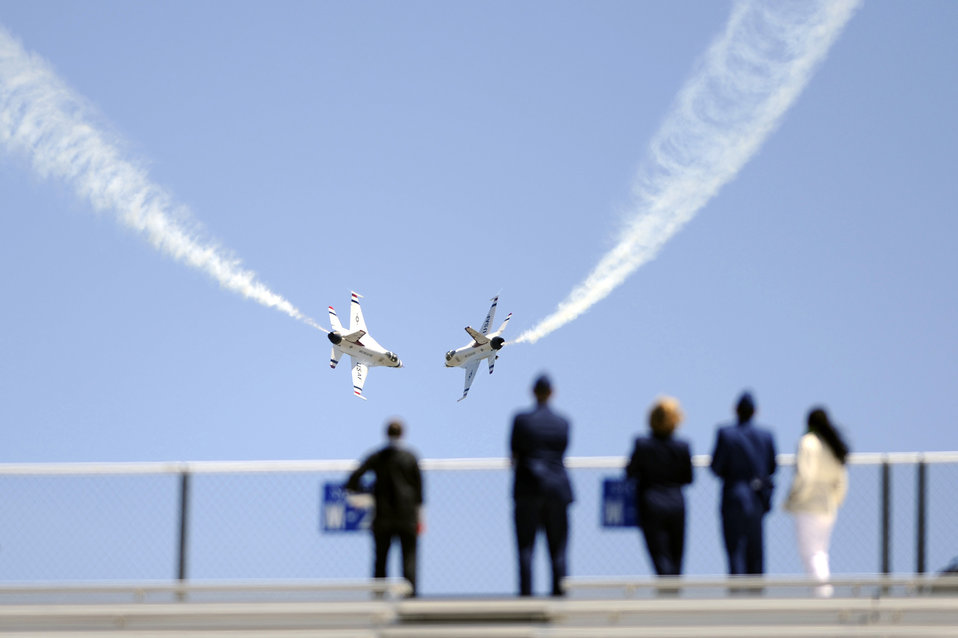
2009 U.S. Air Force Academy graduation

Two Air Force Thunderbirds execute a maneuver over the U.S. Air Force Academy's Falcon Stadium May 27 following the graduation of the Class of 2009. This was the 51st graduating class where 1,046 cadets were commissioned as second lieutenants. Vice President Joe Biden was the commencement speaker.